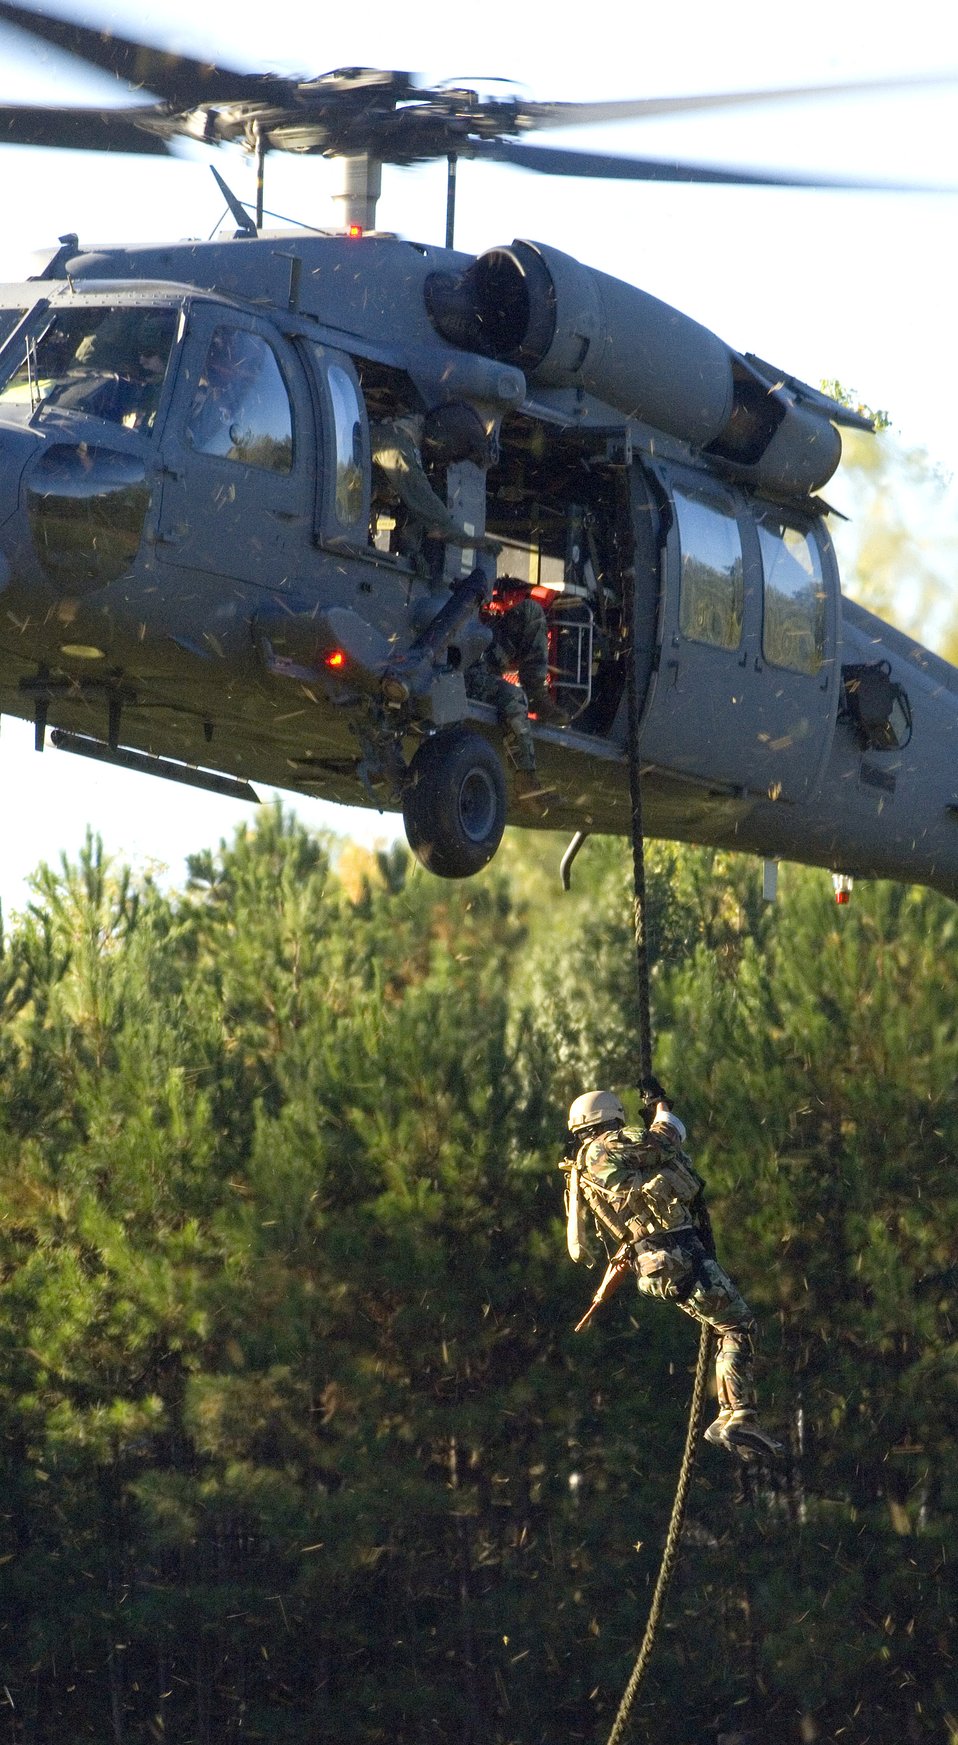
Airmen visit schools as part of Air Force Week Atlanta

Members of the 920th Rescue Wing, at Patrick Air Force Base, Fla., hoist Master Sgt. John Shiman aboard their HH-60G Pave Hawk helicopter Oct. 10 during an Air Force Week Atlanta event at Etowah High School in Woodstock, Ga.